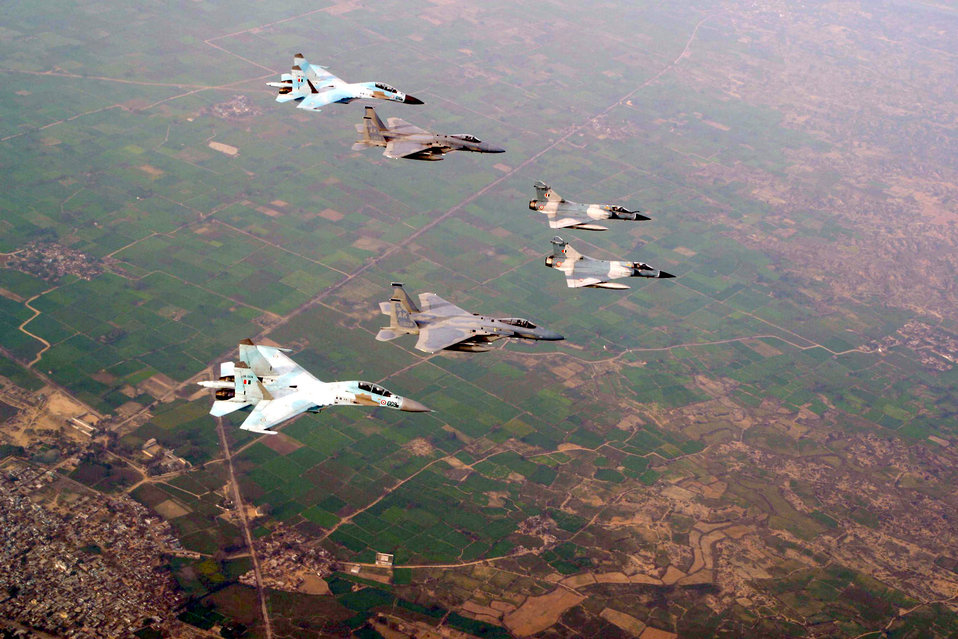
Cope India in full force

OVER INDIA -- Two F-15 Eagles (middle of V formation) from Elmendorf Air Force Base, Alaska, fly with two Indian air force SU-30K Flankers (rear) and two Mirage 2000 aircraft during Cope India '04. The exercise is the first dissimilar air combat training exercise between the two air forces in more than 40 years. The 10-day exercise ended Feb 25.